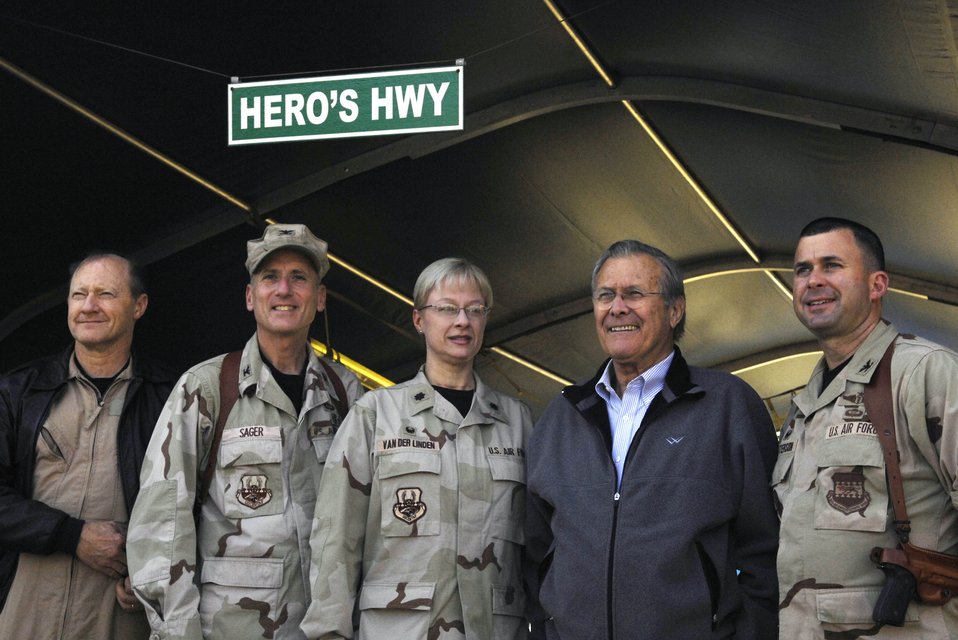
Iraqi Freedom

Secretary of Defense Donald H. Rumsfeld takes a photo Dec. 9 with medical staff members from the Air Force Theatre Hospital at Balad Air Base, Iraq. Rumsfeld made a surprise visit to Iraq to thank servicemenbers and their families for their sacrifices and service to the country.